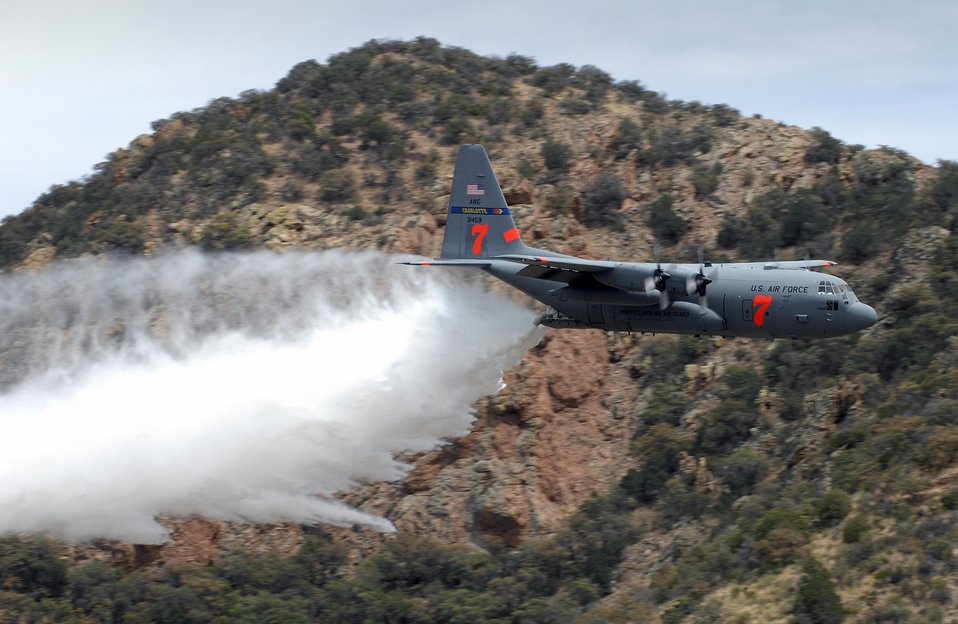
Hitting the zone

A C-130 Hercules drops